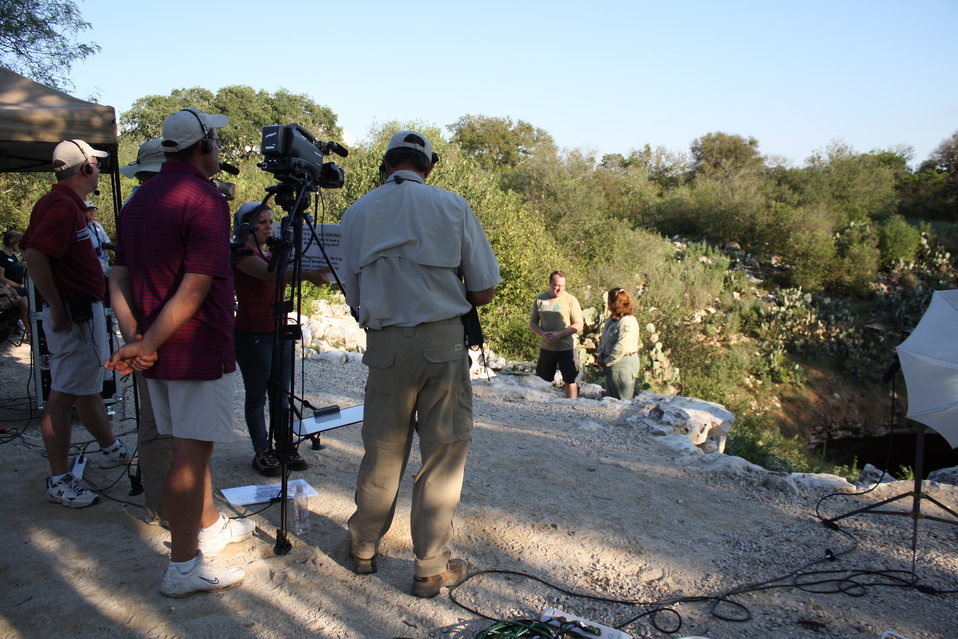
Filming BatsLIVE